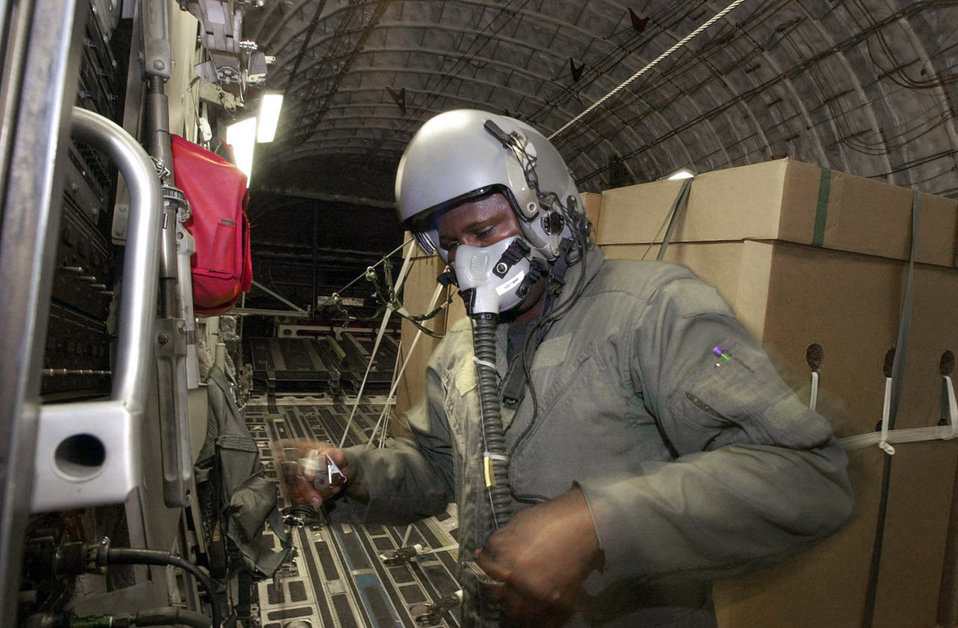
Preparing the Drop

OPERATION ENDURING FREEDOM -- U.S. Air Force Loadmaster